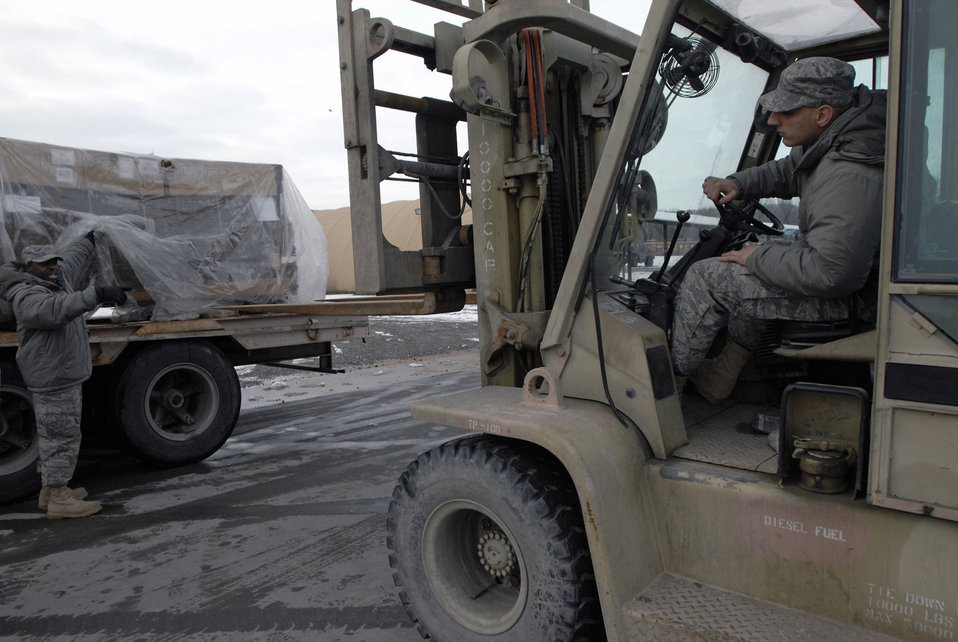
Manas members continue to support coalition operations

Senior Airman Taurence Campbell directs Airman 1st Class Brian Moeller to safely align the 10K forklift in order to offload a pallet of tri-wall boxes Feb. 4 at Manas Air Base, Kyrgyzstan. The boxes will be used for shipping military equipment to and from Afghanistan. Manas AB serves as a mobility hub for operations in Afghanistan, providing daily refueling missions and supporting personnel and cargo transiting in and out of Afghanistan. The Airmen are with the 376th Expeditionary Logistics Readiness Squadron here. Airman Campbell is deployed from McChord Air Force Base, Wash., and Airman Moeller is deployed from Ramstein AB, Germany.